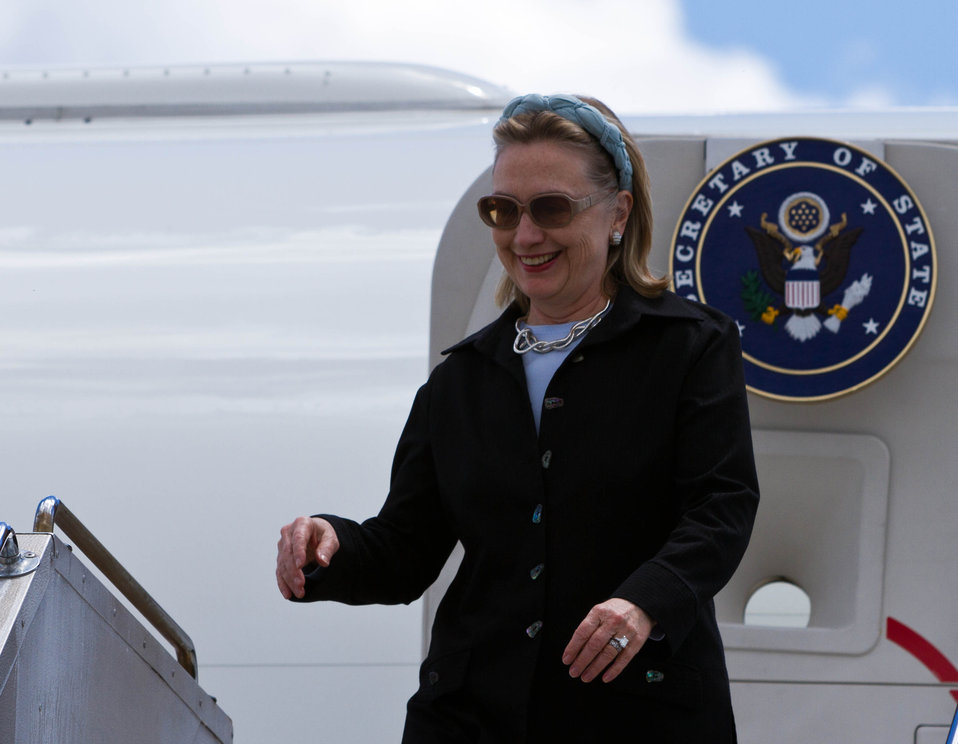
Secretary Clinton Arrives in Melbourne

U.S. Secretary of State Hillary Rodham Clinton steps off the plane in Melbourne, Australia, on November 7, 2010.